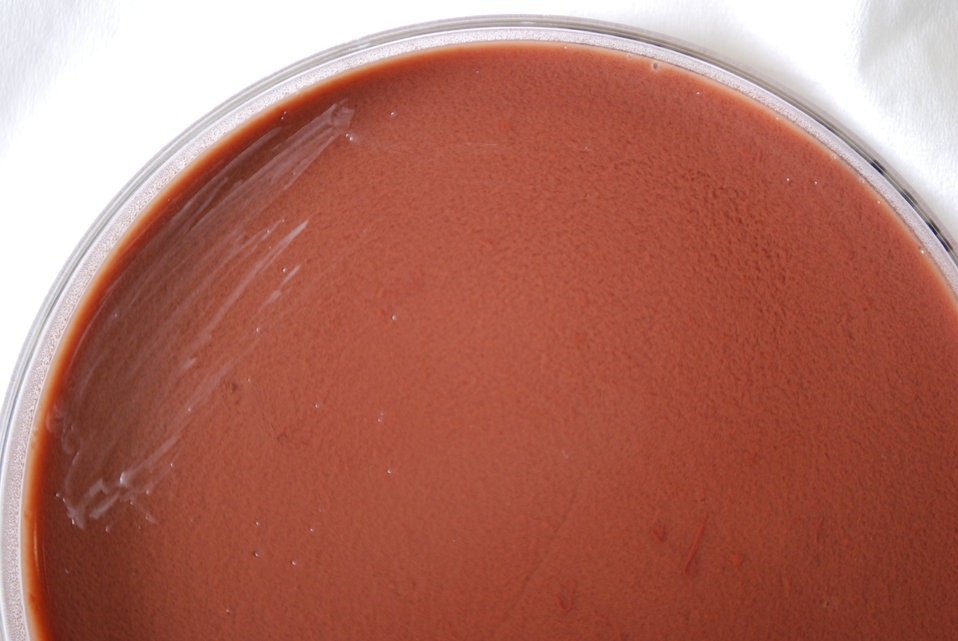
A closer view of PHIL 12208, this photograph depicts the colonial morphology displayed by Gram-negative Brucella abortus bacteria, which was grown on a medium of chocolate agar, for a 24 hour time period, at a temperature of 37�C.